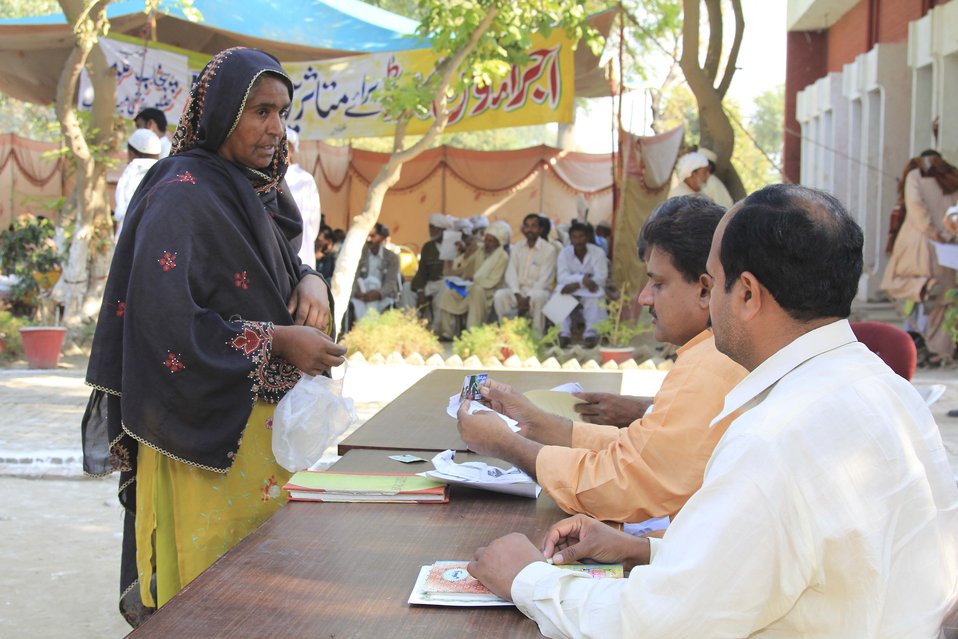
Citizens Damage Compensation Program